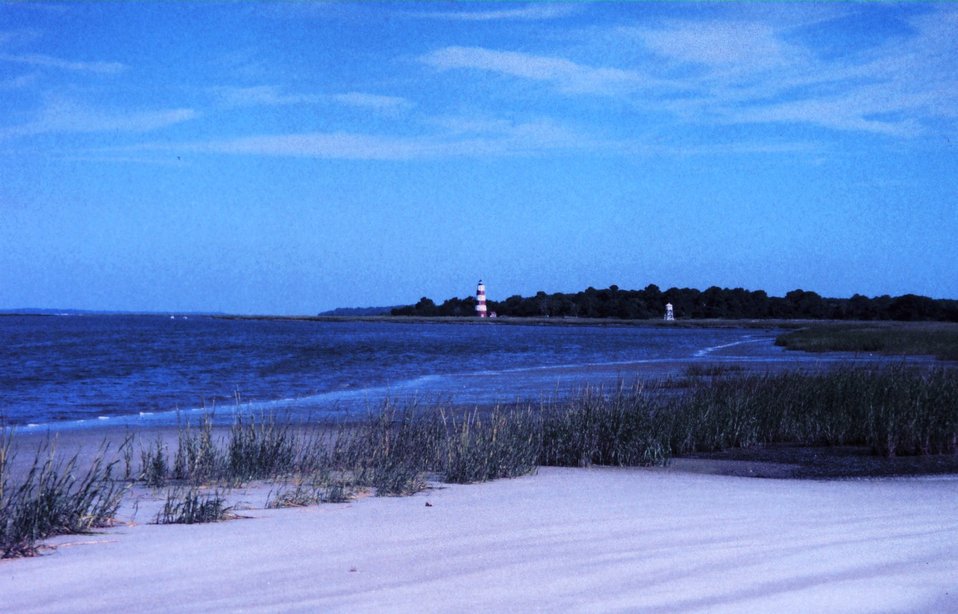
The Sapelo Island lighthouse was built in 1820 on the south end of the island. It continues to serve as a navigational landmark for boatmen entering Doboy Sound and Duplin River system.